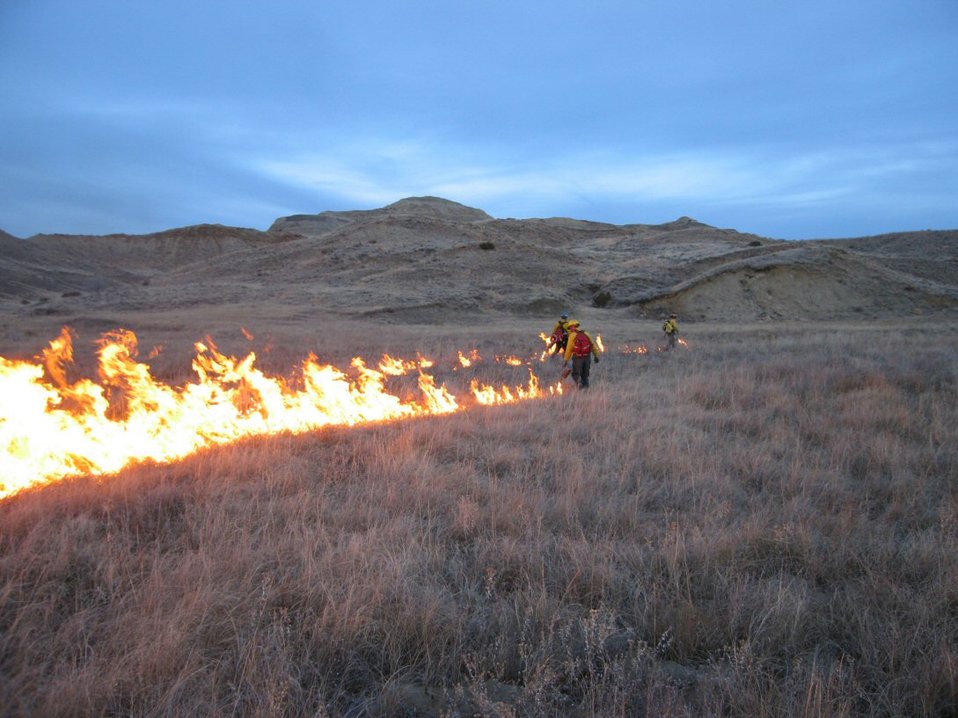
Black Line

Prescribed fires are are restricted to a particular area by black lines. Black lines are created by setting fire to the leeward side of a site, allowing the fire to slowly advance in a controlled fashion against the wind. This creates a wide firebreak around the prescribed fire site.